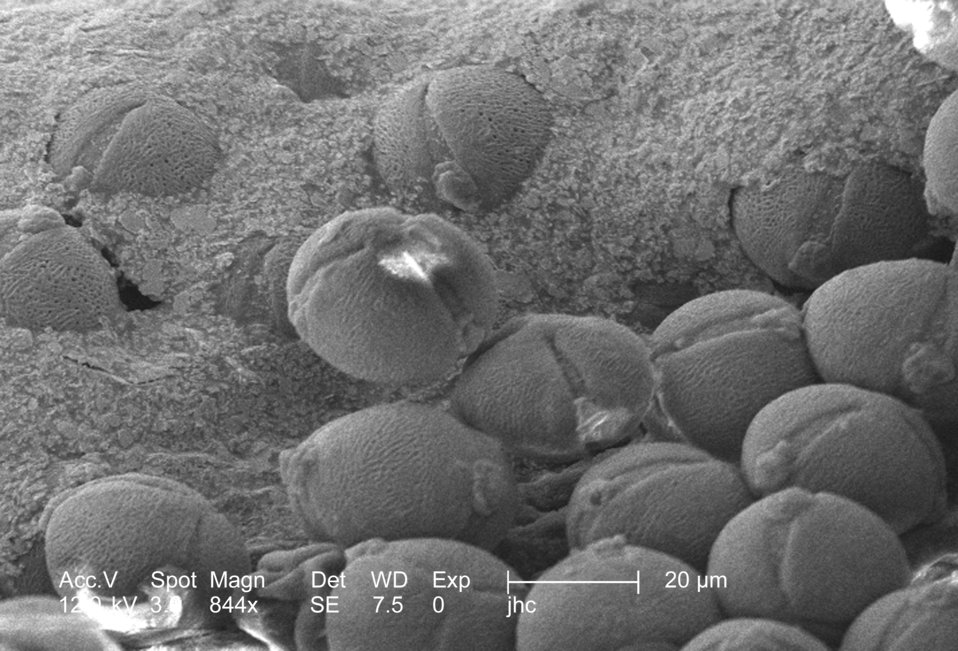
Under a moderately high magnification of 844x, this scanning electron micrograph (SEM) revealed some of the morphologic ultrastructure found amongst a collection of pollen found within the dehisced, or split open, anther of a yellow "Fireworks" sundrops, Oenothera fruticosa flower. Note the granules embedded in a sandy-like substance. This finely granulated substance represents the contents of the disintegrated tapetum cells, which during the pollens' development, surrounds the maturing pollen grains, and has been termed "pollenkitt".